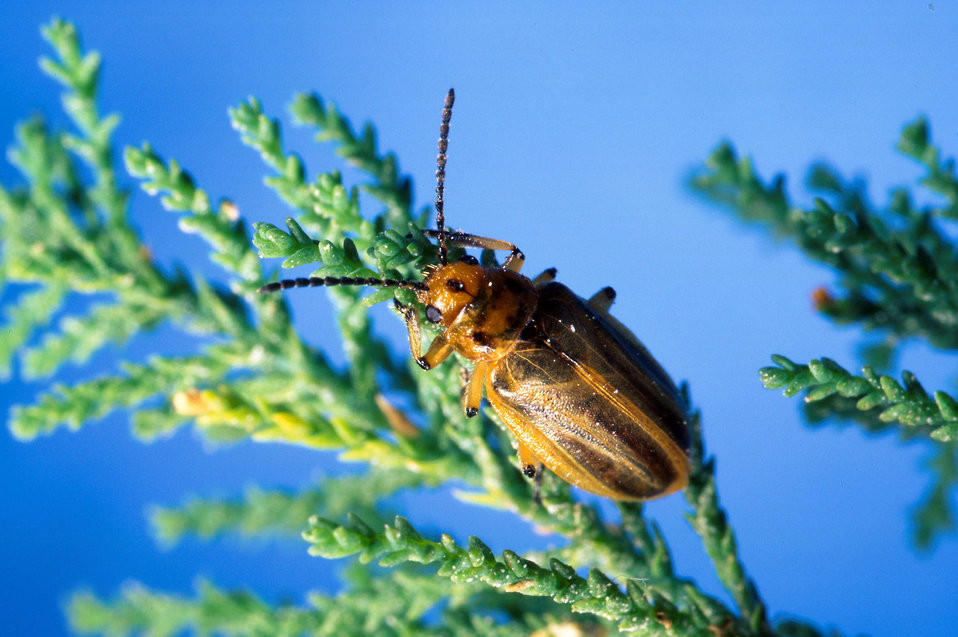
The leaf beetle (Diorhabda elongata) is the first approved biological control agent for saltcedar in the U.S.